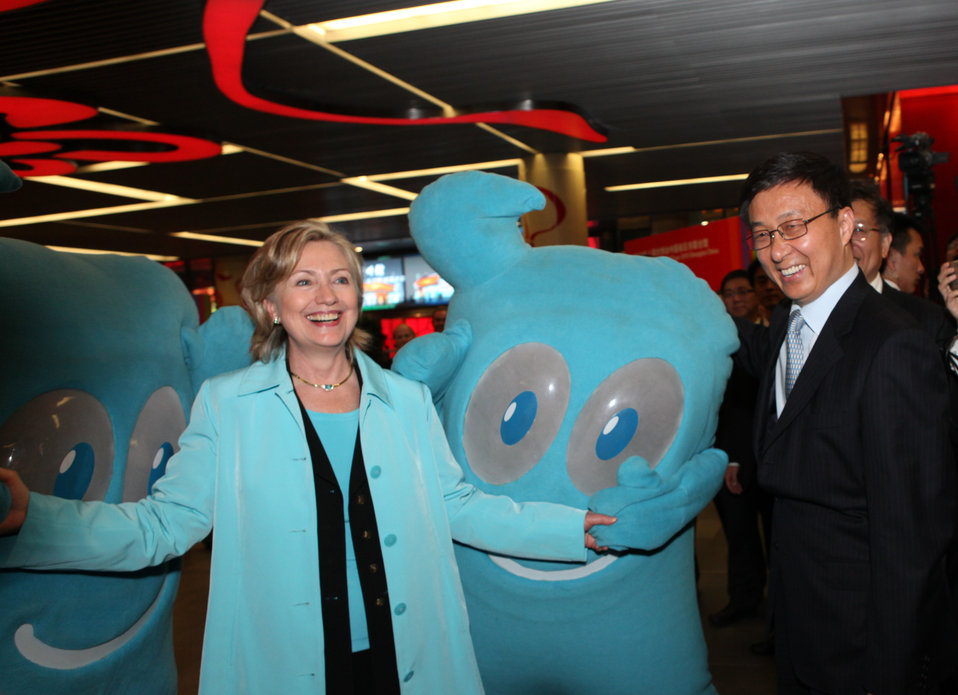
Secretary Clinton Poses With “Haibao” and Shanghai’s Mayor Han Zheng

U.S. Secretary of State Hillary Rodham Clinton poses with “Haibao,” the mascot of the 2010 Shanghai Expo, and Han Zheng, the Mayor of Shanghai in Shanghai, China, May 22, 2010.